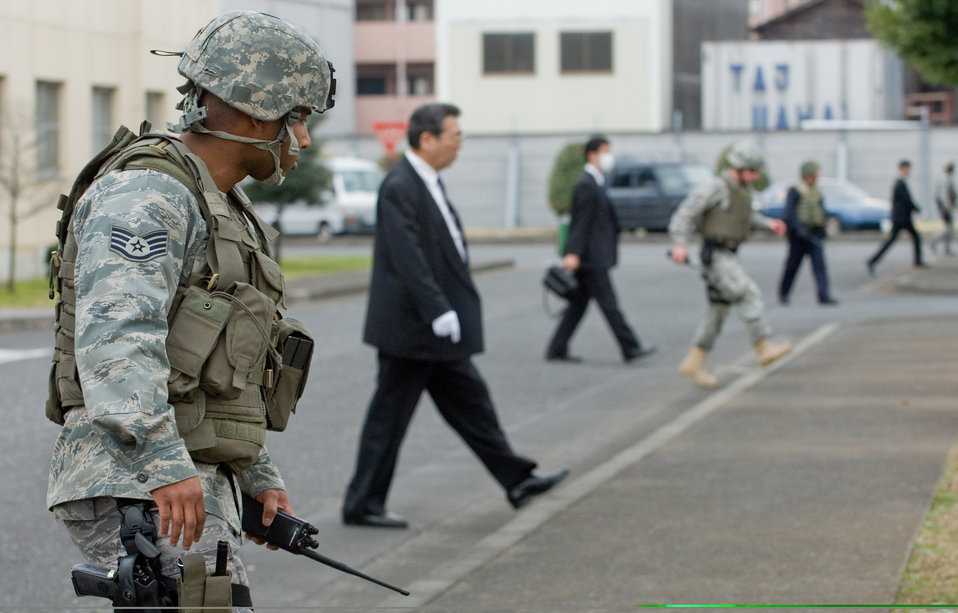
Yokota Airmen train with Japanese police

Staff Sgt. Jay King searches for unexploded ordnance with the Japanese National Police-Fussa Division during a joint unexploded ordnance response exercise March 27 at Yokota Air Base, Japan. Sergeant King is assigned to the 374th Security Force Squadron.